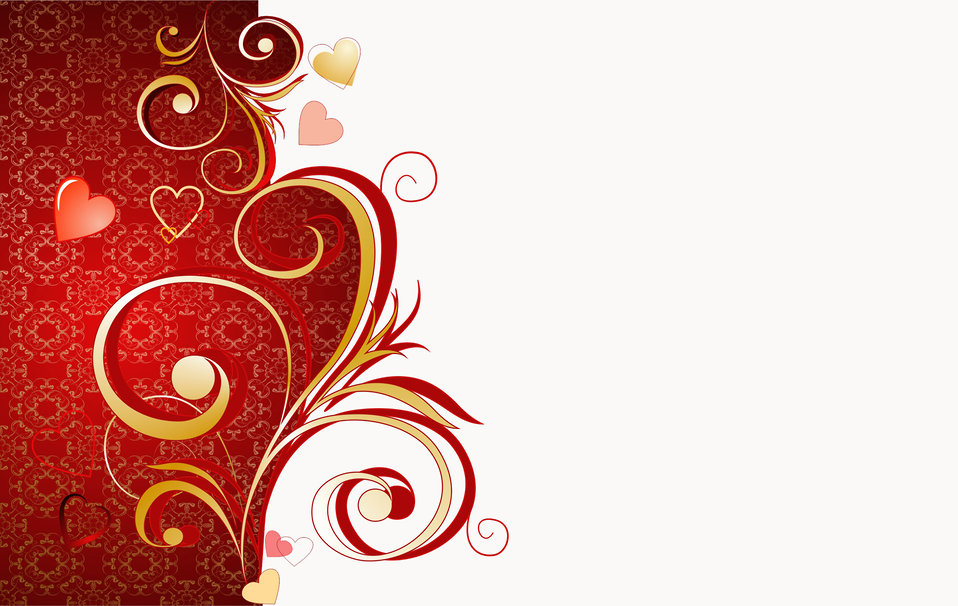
Abstract background with hearts

Red abstract background with hearts, glitter and gold lines..